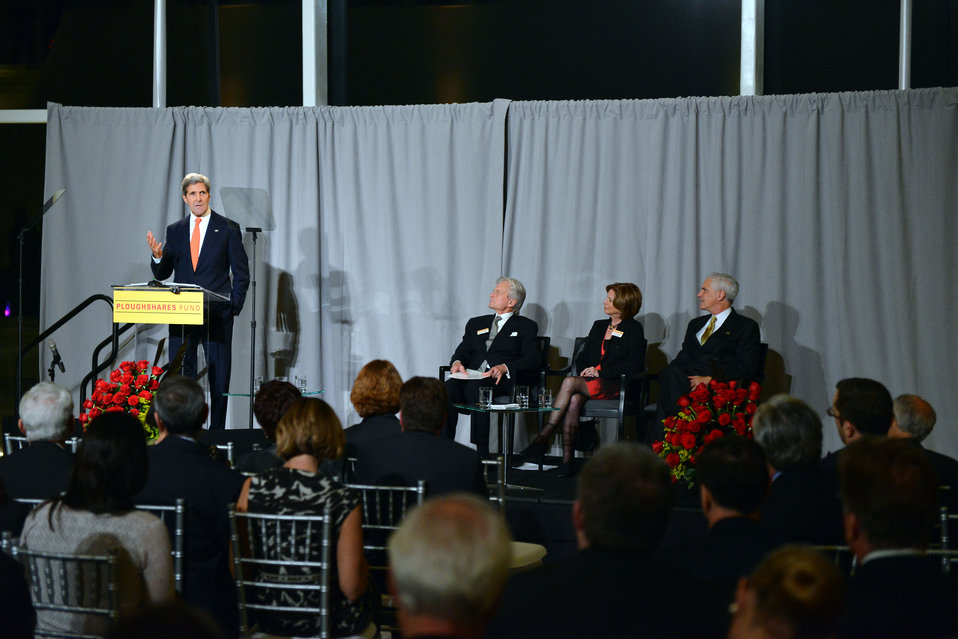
Secretary Kerry Delivers Remarks at the Ploughshares Fund Gala

U.S. Secretary of State John Kerry delivers remarks at the Ploughshares Fund Gala at the U.S. Institute of Peace in Washington, D.C., on October 28, 2013. You can view the Secretary's remarks here: www.state.gov/secretary/remarks/2013/10/215951.htm.